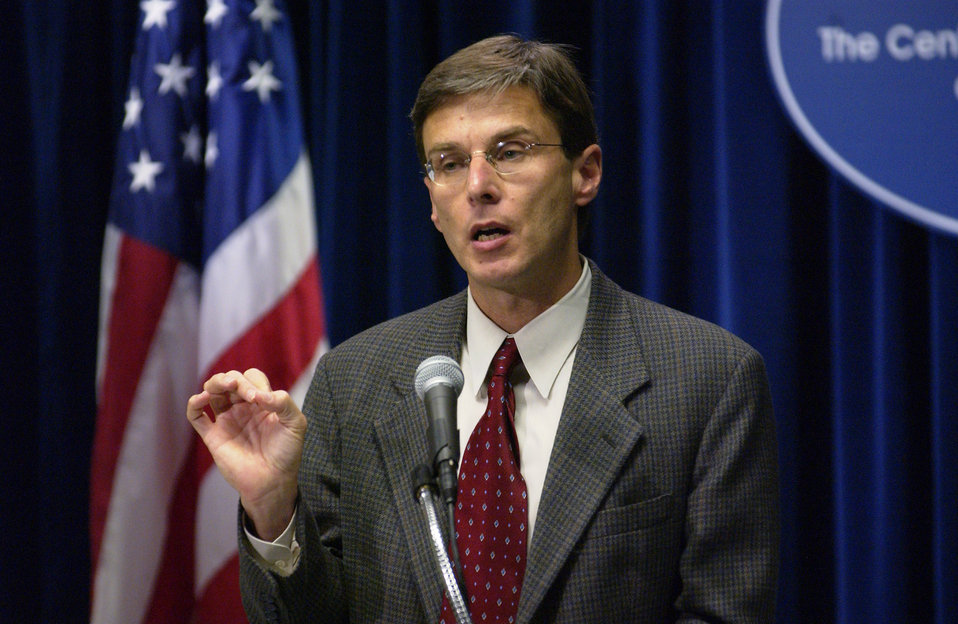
This was a Monkeypox Update press briefing presented by Dr. David Fleming, June 11, 2003.